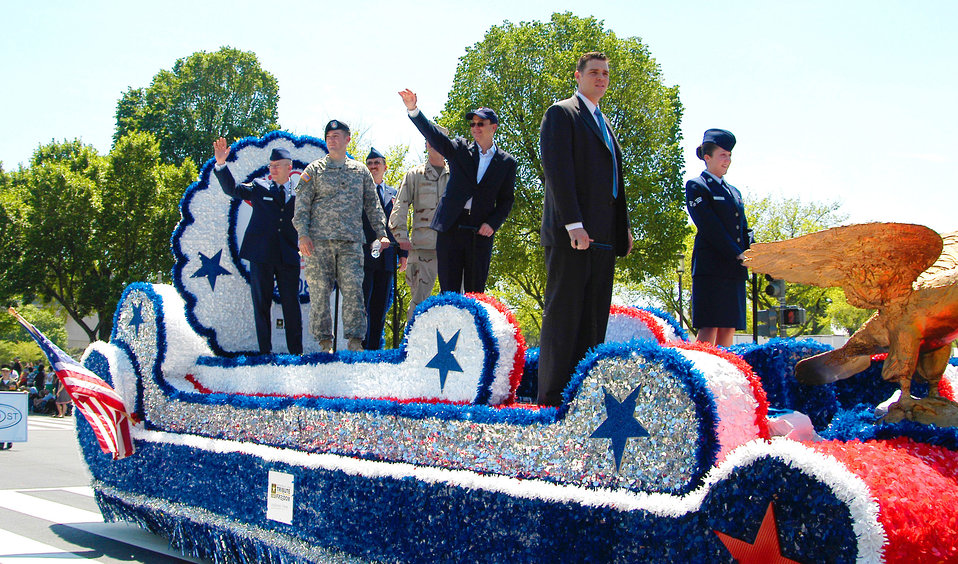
AFOSI Agent serves as Grand Marshall in National Memorial Day Parade

Master Sgt. Ronald Beadles (far left), 319th Maintenance Squadron, Grand Forks Air Force Base, N.D., and Senior Airman Mary Bullock (far right), 11th Intelligence Squadron, Hurlburt Field, Fla., were handpicked by Air Force leadership to be grand marshals in this year's parade because of their heroic acts or outstanding work in support of Operations Iraqi Freedom or Enduring Freedom. Also aboard the lead float was actor and Grand Marshal Gary Sinise.